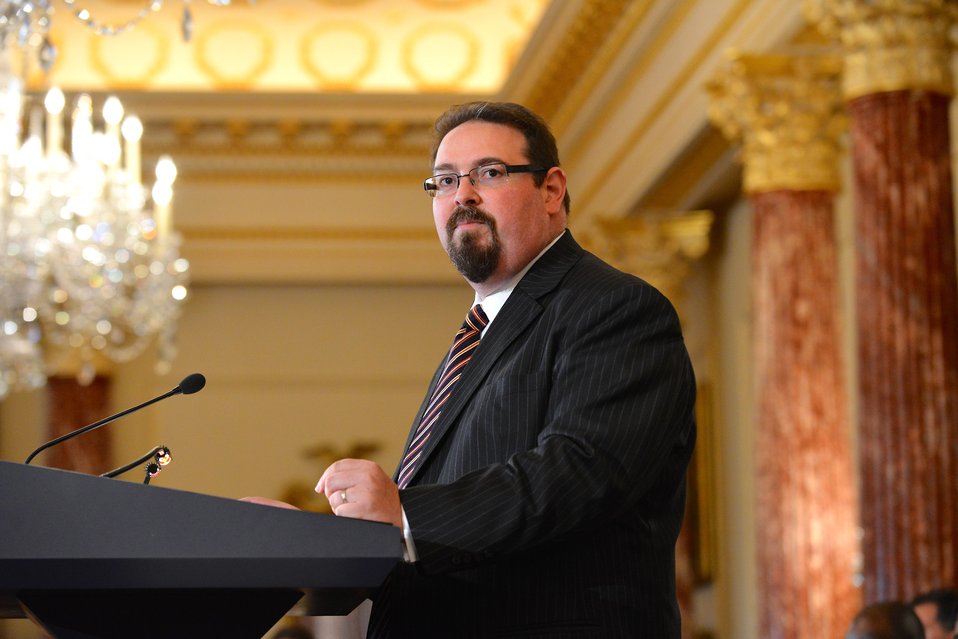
Ambassador CdeBaca Introduces Secretary Kerry at the Release of the 2014 Trafficking in Persons Report

Ambassador-at-Large Luis CdeBaca introduces U.S. Secretary of State John Kerry at the release of the 2014 Trafficking in Persons Report, which assesses government efforts around the world to combat modern slavery, at the U.S. Department of State in Washington, D.C., on June 20, 2014.